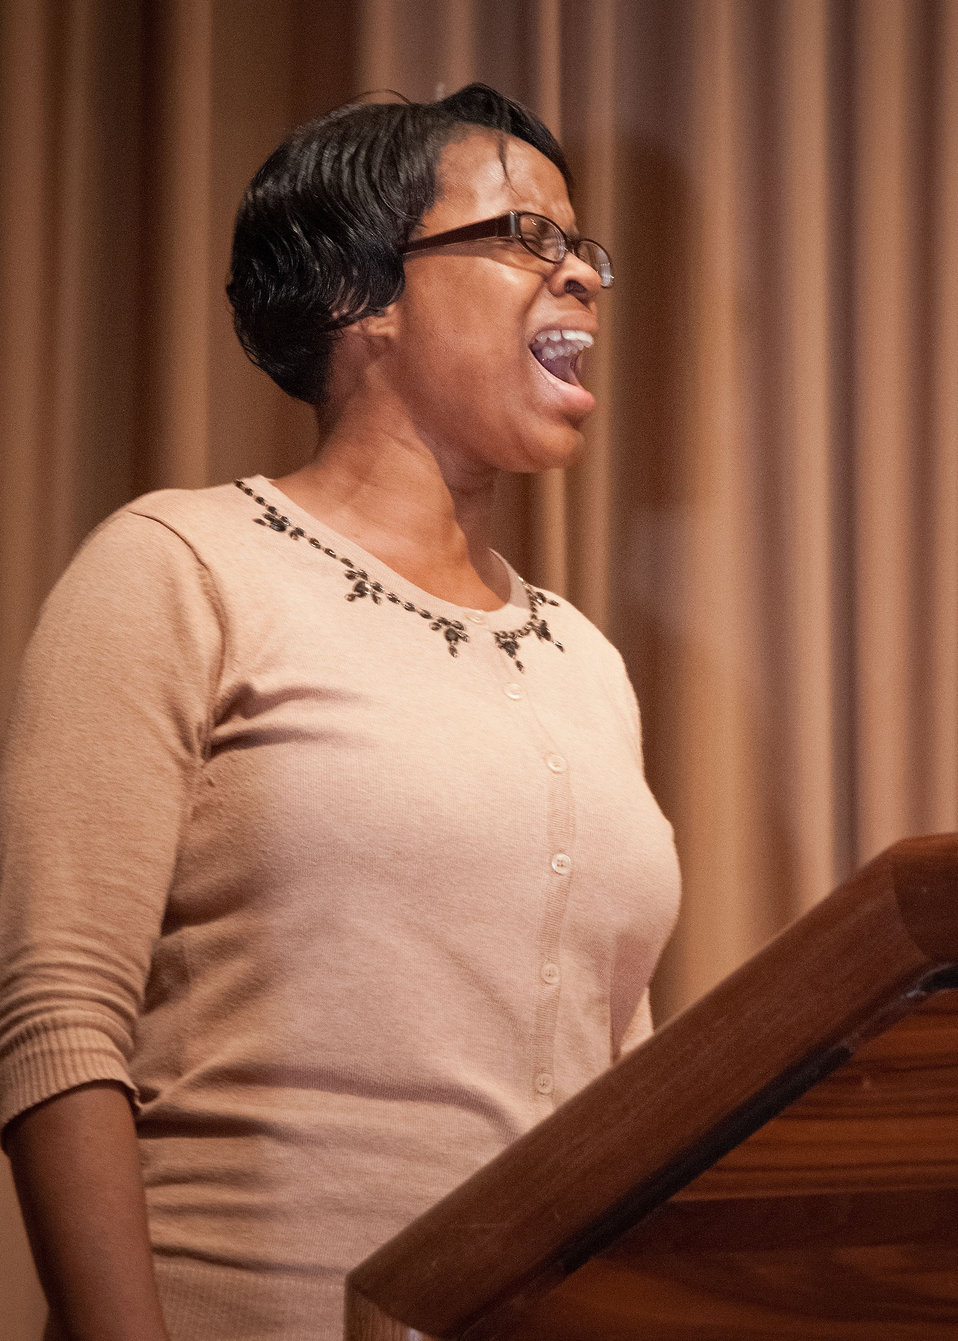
Agriculture Office of the Assistant Secretary for Civil Rights Human Resource Specialist Donna Carter sings the National Anthem at the U.S. Department of Agriculture Veterans Day Observance: Honoring All Who Served, in Washington, D.C. on Wednesday, Nov. 7, 2012.